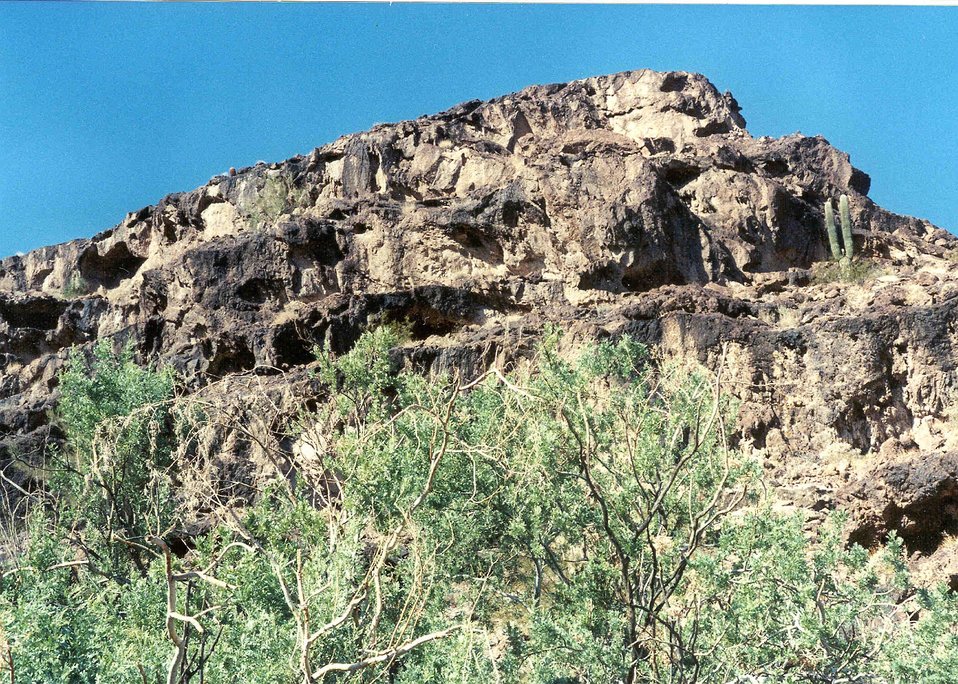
Layered rock in the Trigos Wilderness Area